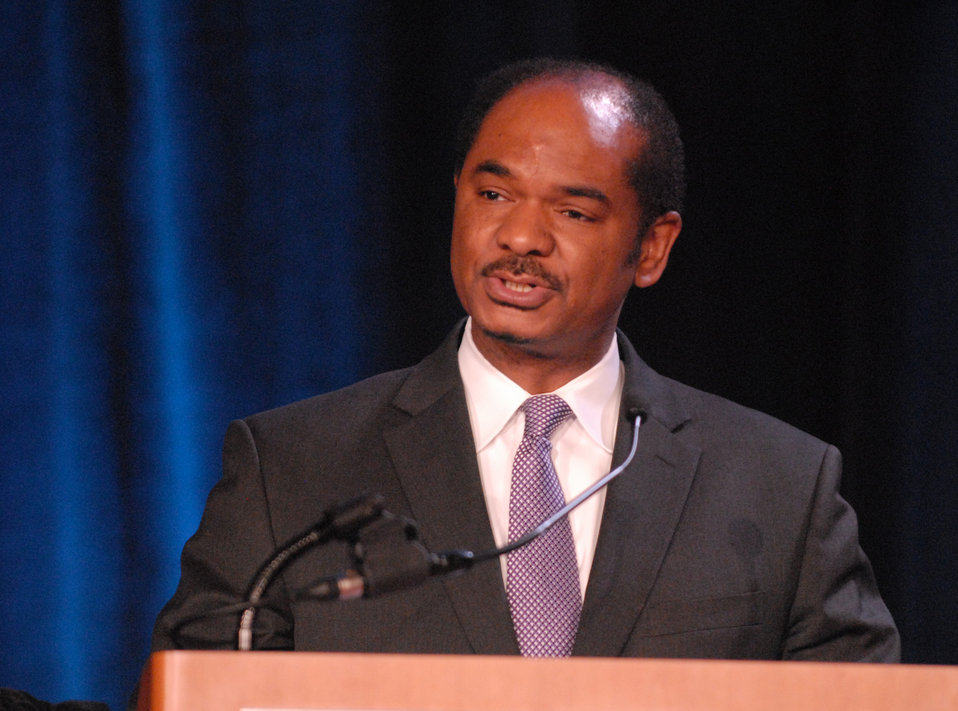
Family support networks

Robert L. Gordon III, the deputy assistant secretary of defense for military community and family policy, addresses nearly 2,000 family-support professionals April 27, 2011, during the 2011 Family Resilience Conference in Chicago.